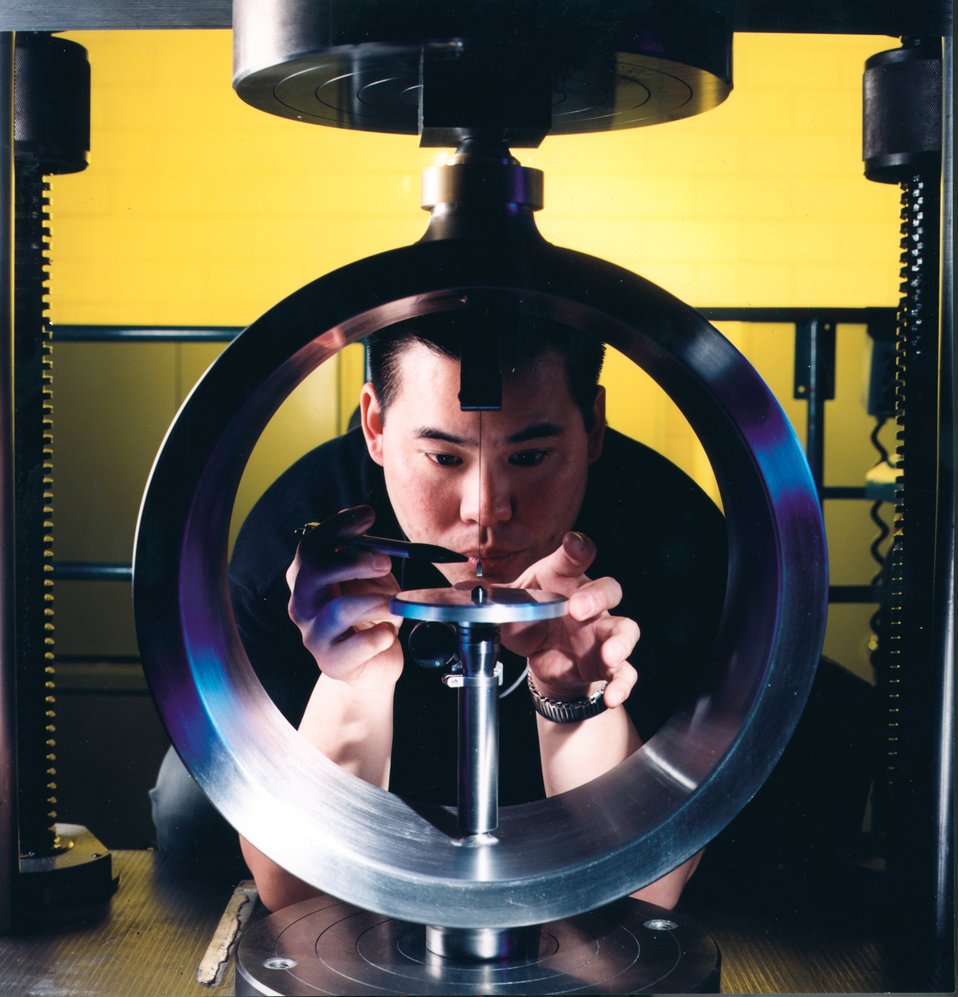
Proving Ring

NIST force measurements are critical for accurately determining the power of internal combustion engines, the thrust of jet engines, and the strength of materials and structures.